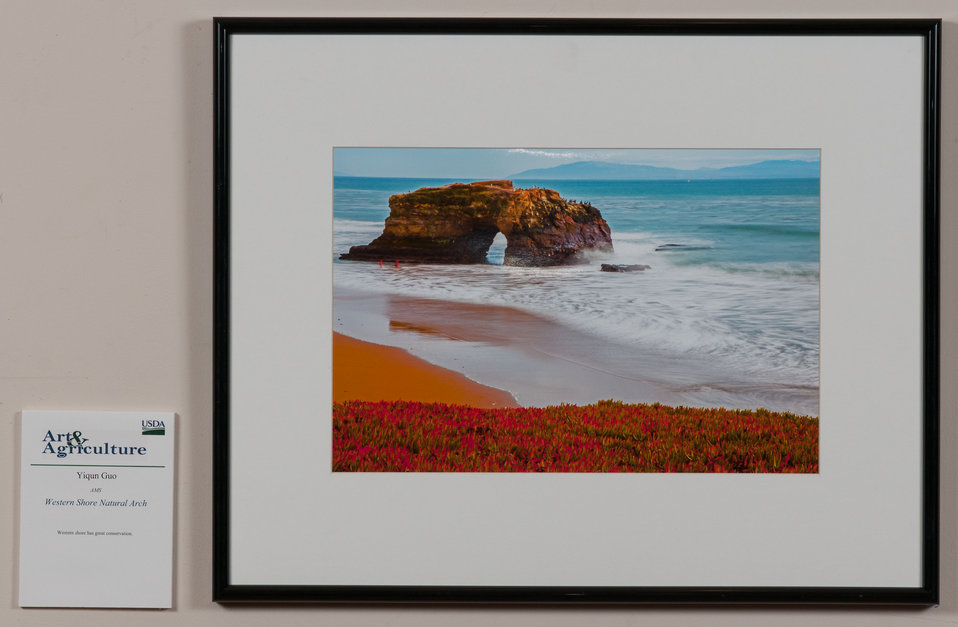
Online Viewer's Choice entries of the 2013 Art & Agriculture, Tuesday, July 9, 2013, in the South Building, Washington, D.C. Themes were expressed by employees from across the department and the contest was open to full-time and part-time USDA employees. Winning artwork will be displayed till the end of the year. U.S. Artistic expression is a creative outlet that is vital for an individual to grow and develop.